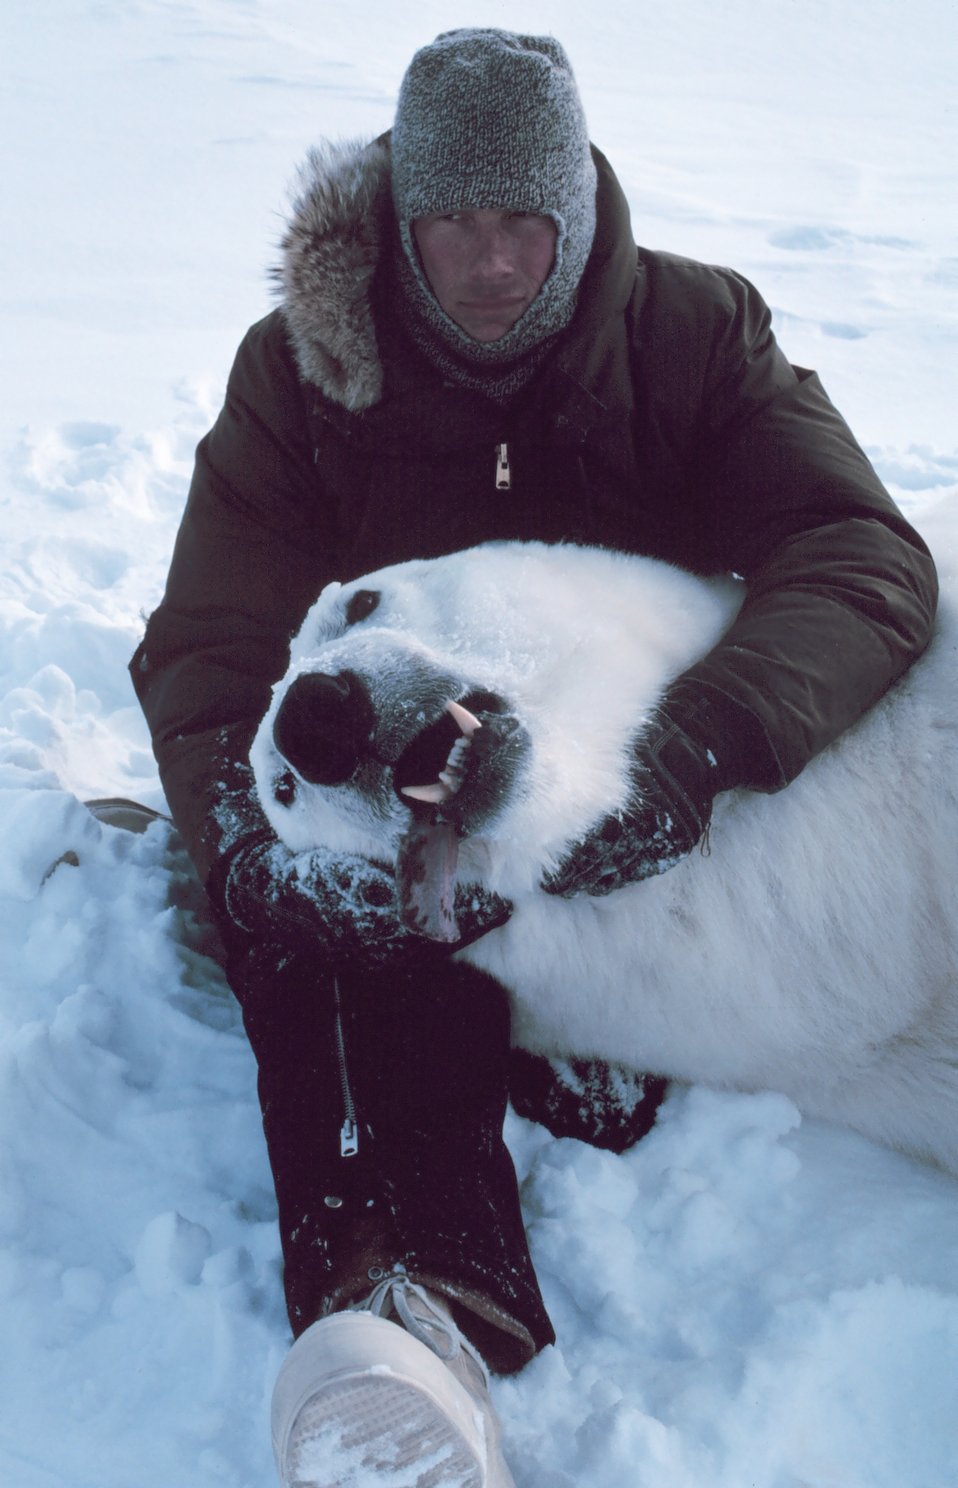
Steve Amstrup with large sedated polar bear - Ursus maritimus. Bears were measured and tagged for future study.